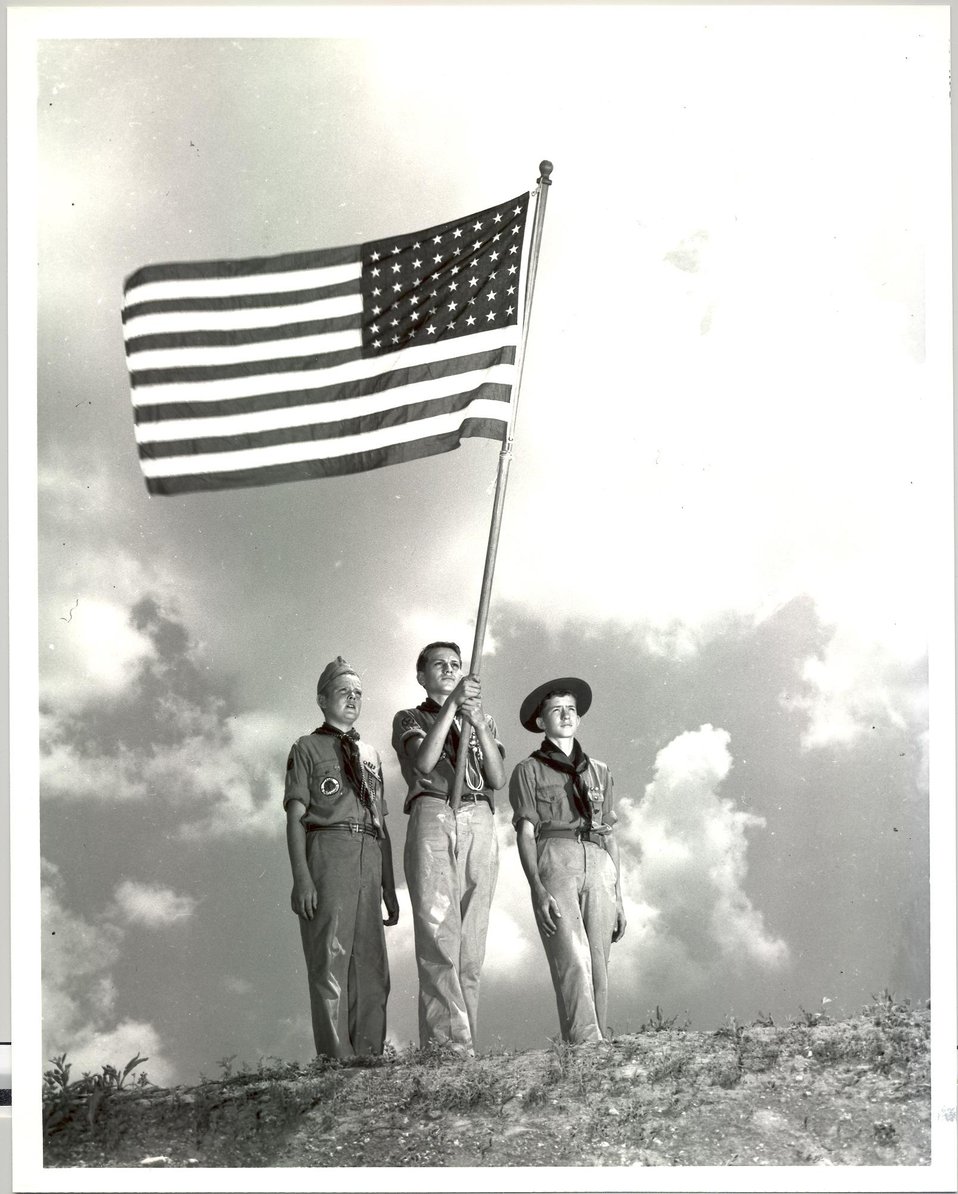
Boy Scouts Holding American Flag, OR Journal, July